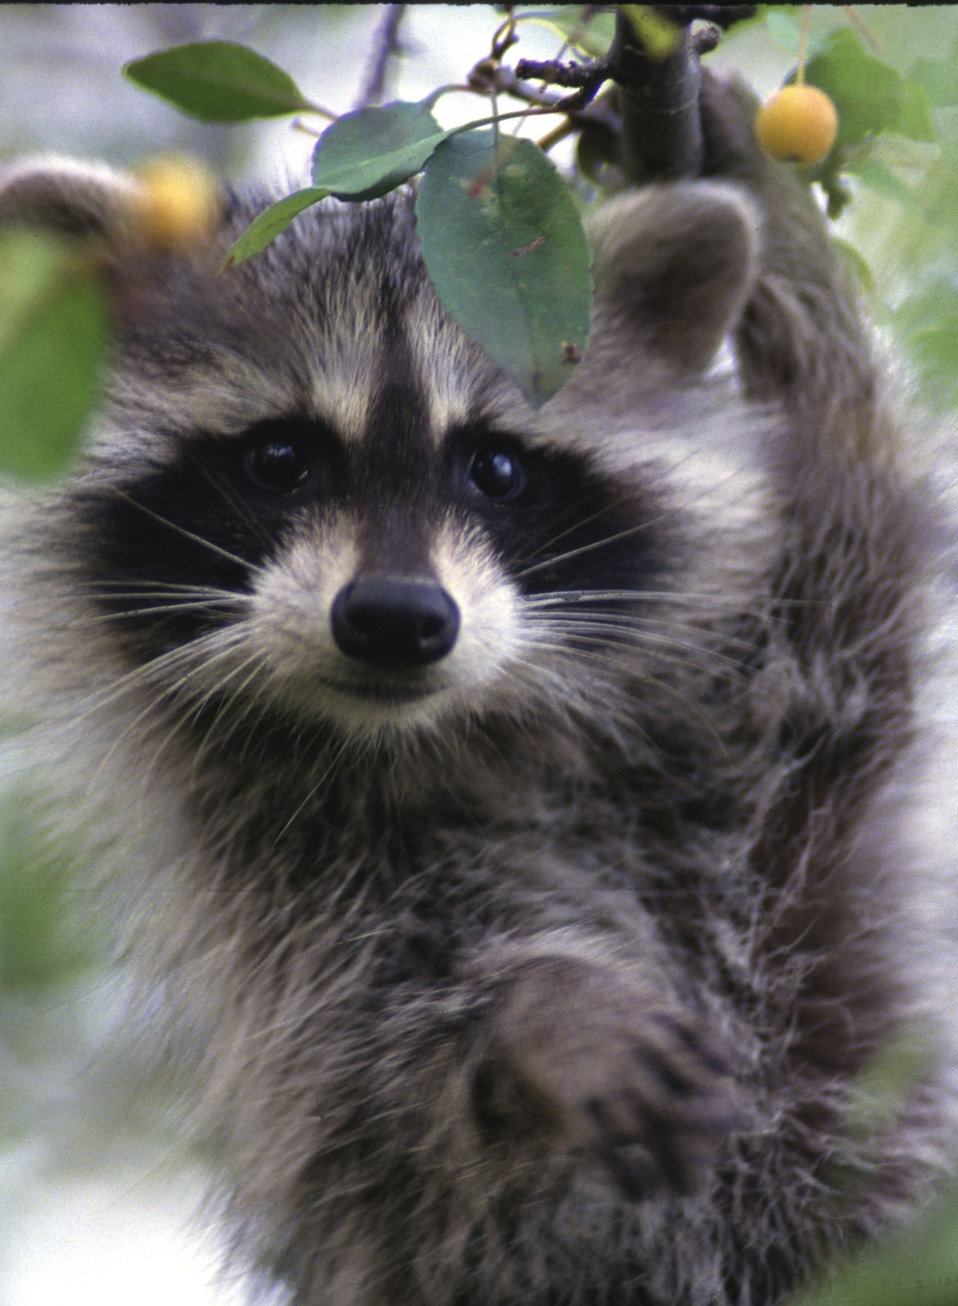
Young Raccoon in Crab Apple Tree

Young raccoon in a crab apple tree at John Heinz National Wildlife Refuge in Philadelphia, Pennsylvania.